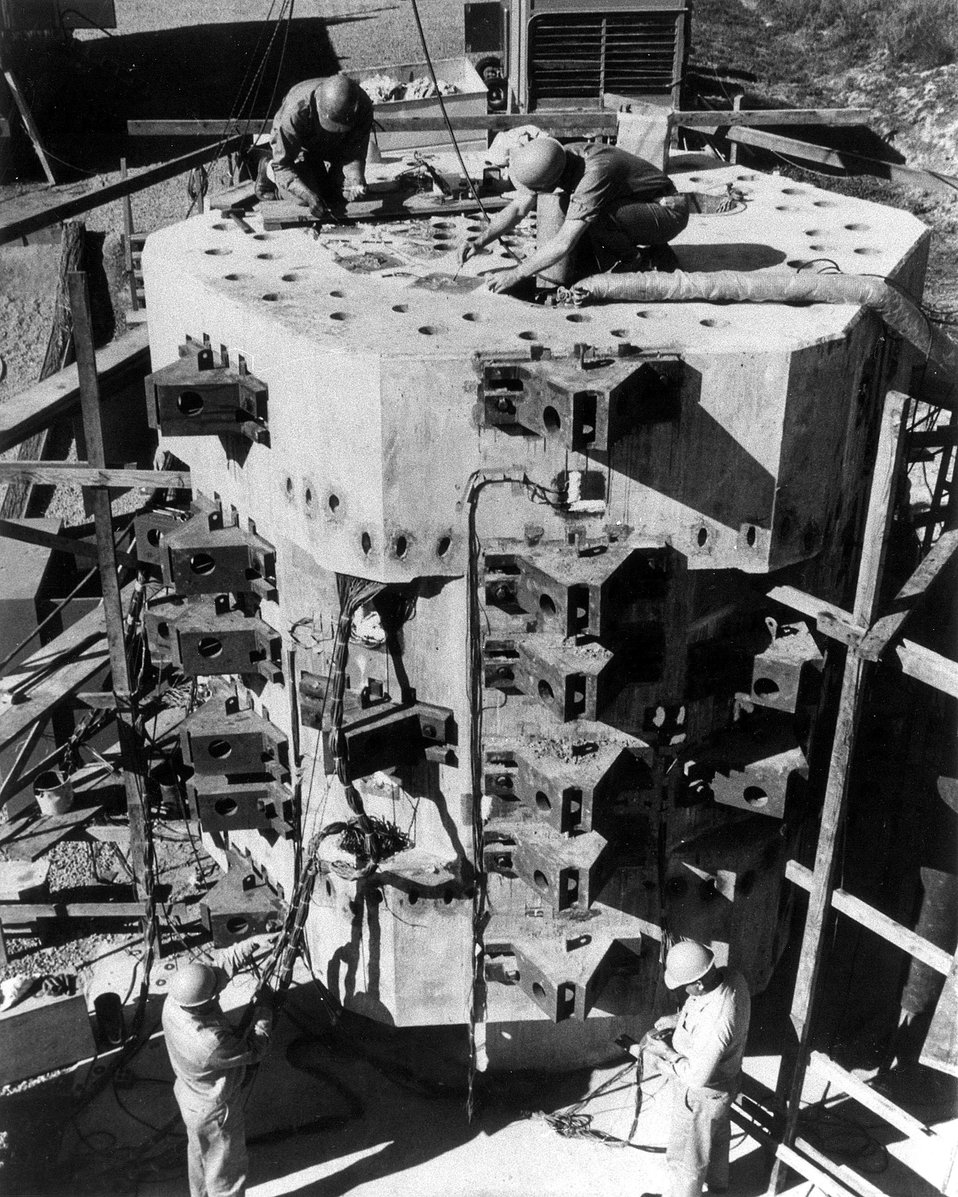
Scale model of a pretressed concrete reactor vessel, built and tested for the AEC at General Atomic Division of General Dynamics, San Diego CA.